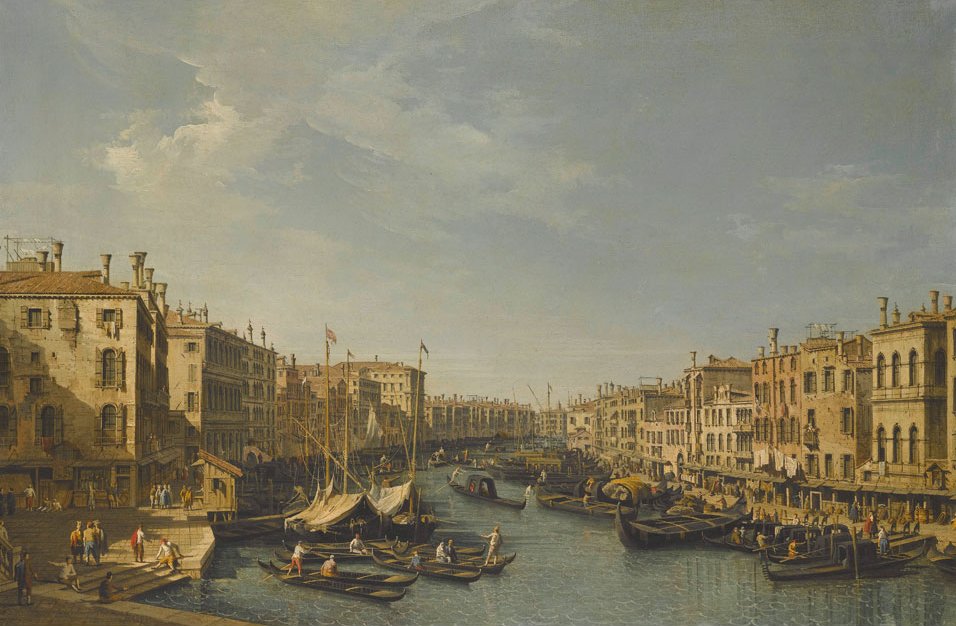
'Venice, The Grand Canal, Looking South-West, From the Rialto Bridge to the Palazzo Foscari' by Bernardo Bellotto